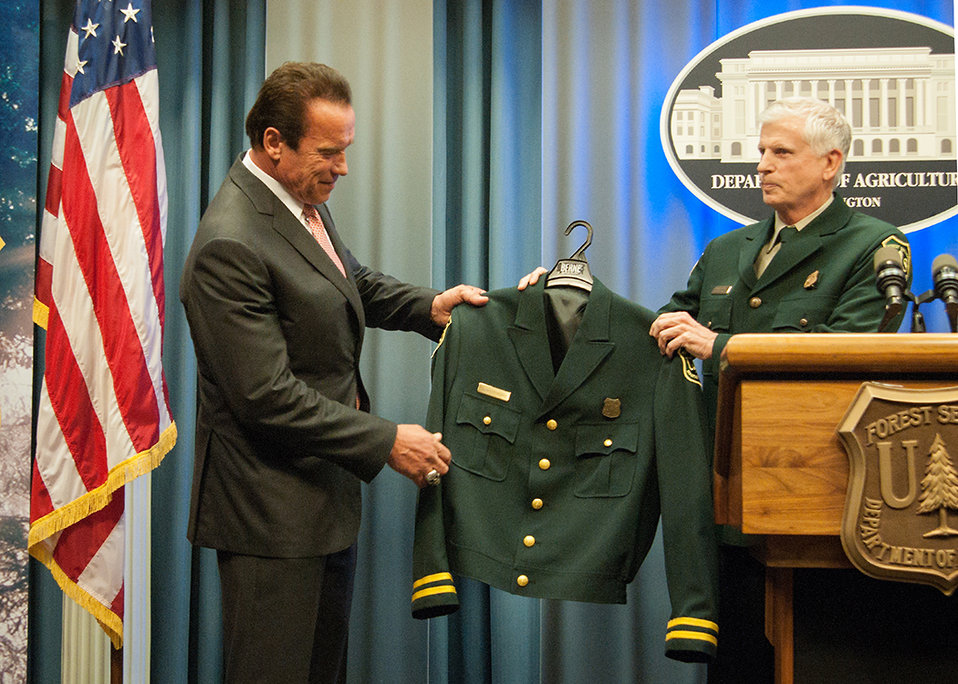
U.S. Forest Service Chief Tom Tidwell (right) presents former California Governor Arnold Schwarzenegger (left) with a ranger’s jacket during an event honoring Gov. Schwarzenegger as an honorary Forest Ranger for his leadership on climate change during a ceremony at the U.S. Department of Agriculture in Washington, D.C. Wed., Oct. 29, 2013. Governor Schwarzenegger the agency’s third honorary forest ranger joins actress Betty White and Rolling Stones keyboard player Chuck Leavell as honorary rangers.